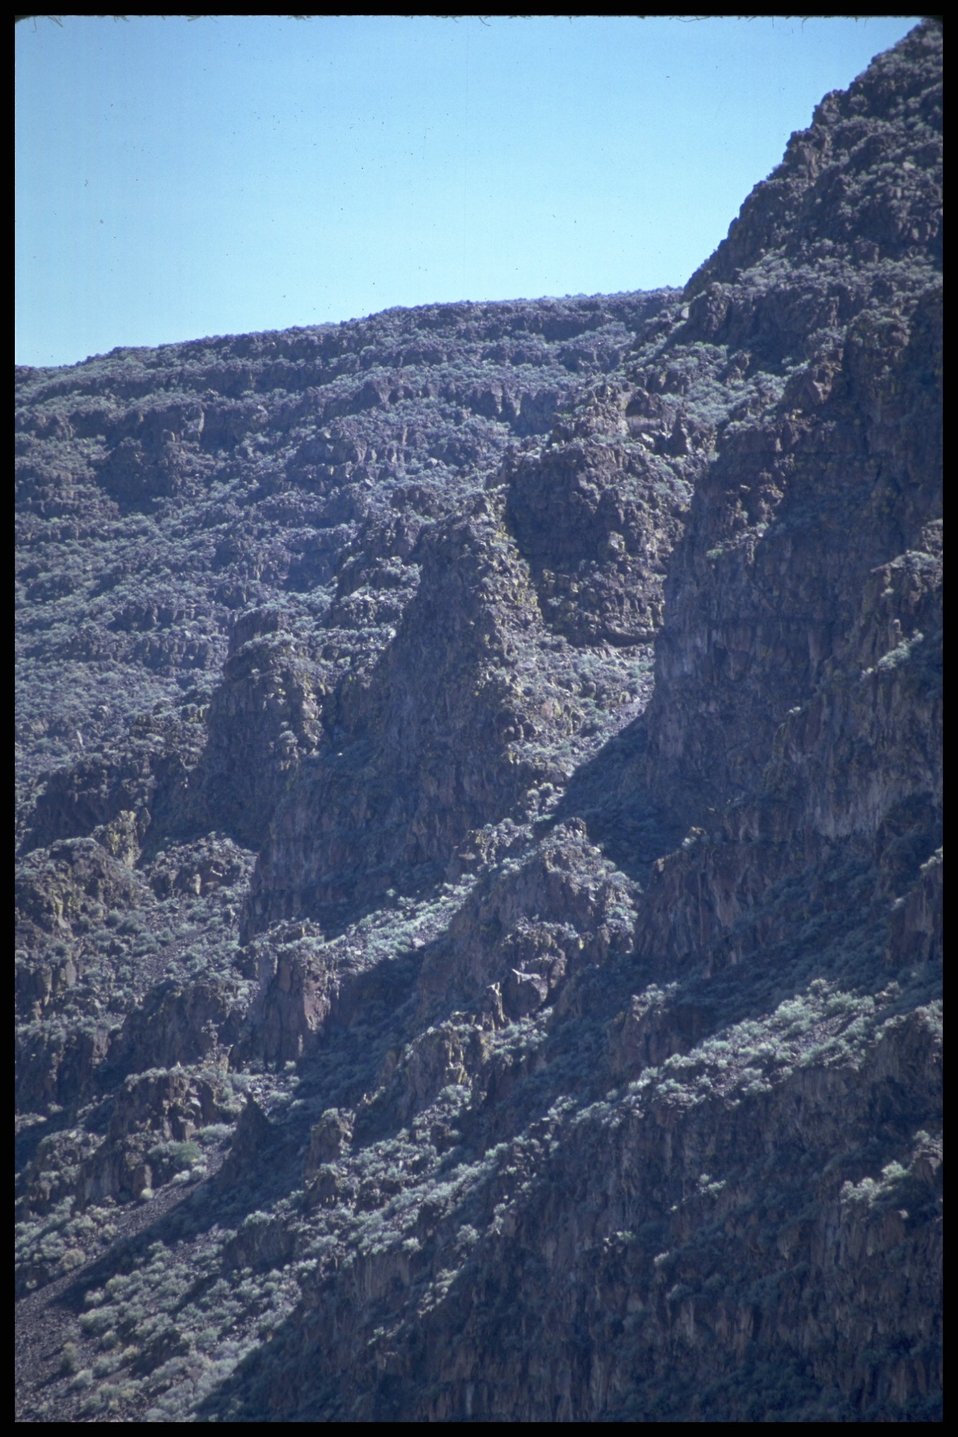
Scenic view from Deep Creek, Lakeview District.